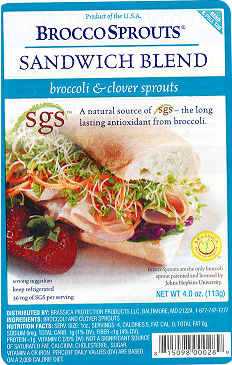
RECALLED - Sprouts

December 31, 2011 - RECALL Green Valley Food Corp. is Expanding Its Recall to Include Additional Products Because of a Possible Health Risk.